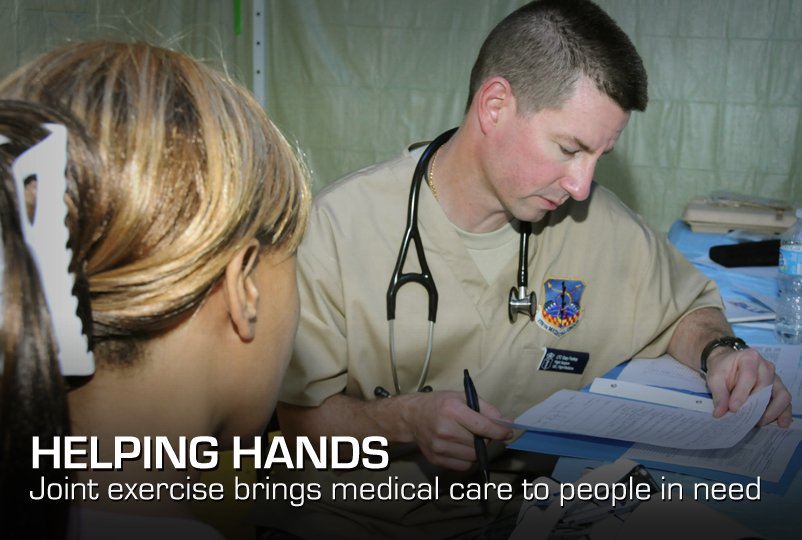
Helping Hands